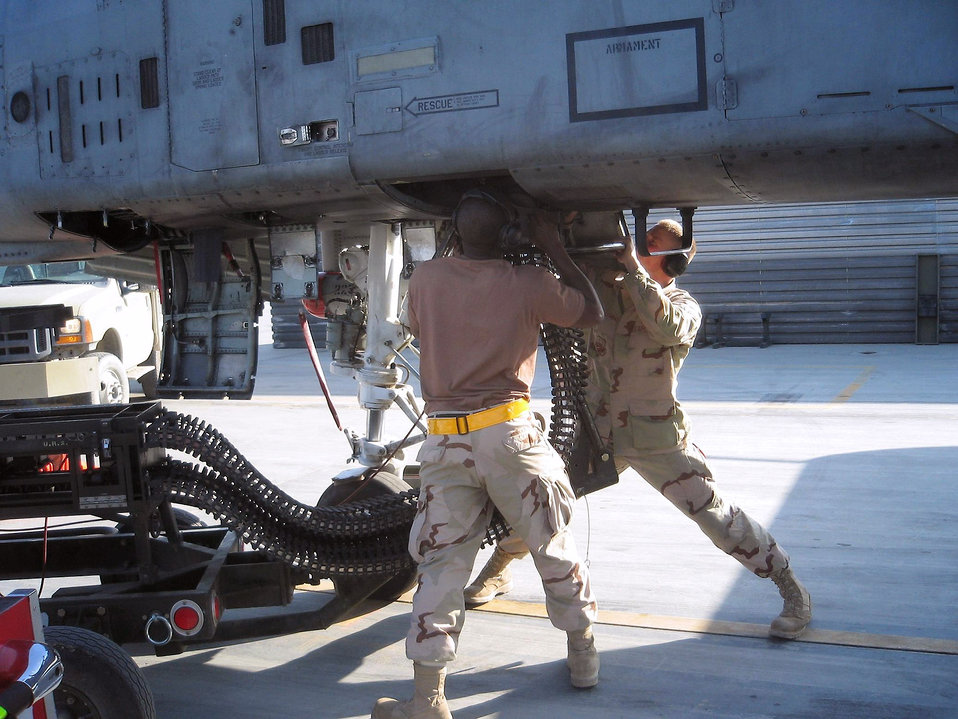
Keeping the A-10 fit to fight

Staff Sgt. Jakonise Jones (left) and Airman Nicholas Giacomino connect an ammunition loading adaptor to the gun system of an A-10 Thunderbolt II at Bagram Air Base, Afghanistan. They are preparing to reload the aircraft with 30 mm ammunition. The Airmen, assigned to the 81st Expeditionary Aircraft Maintenance Unit, are both deployed from Spangdahlem Air Base, Germany.